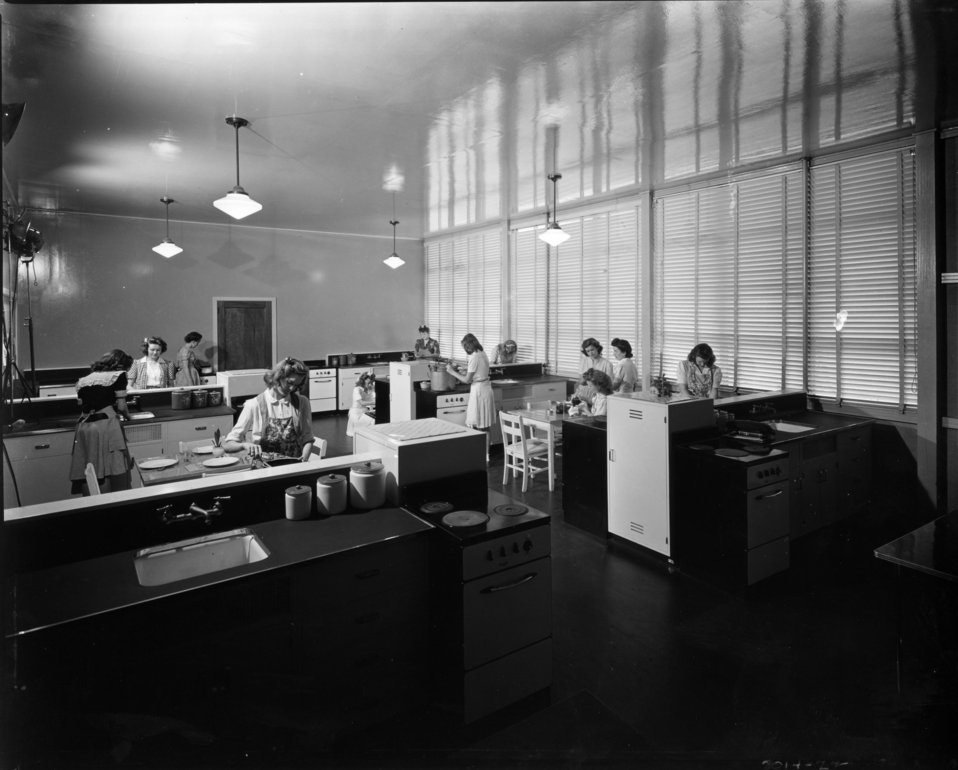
Schools at Oak Ridge